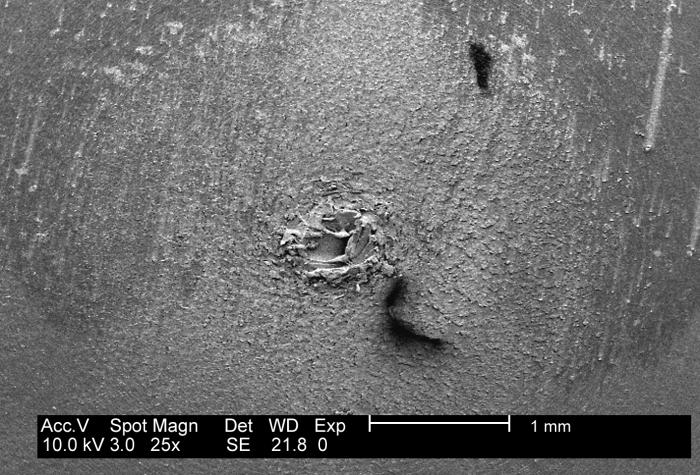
This low-mag SEM shows surface irregularities in biofilm culture material (polycarbonate) growing P. mirabilis bacteria.